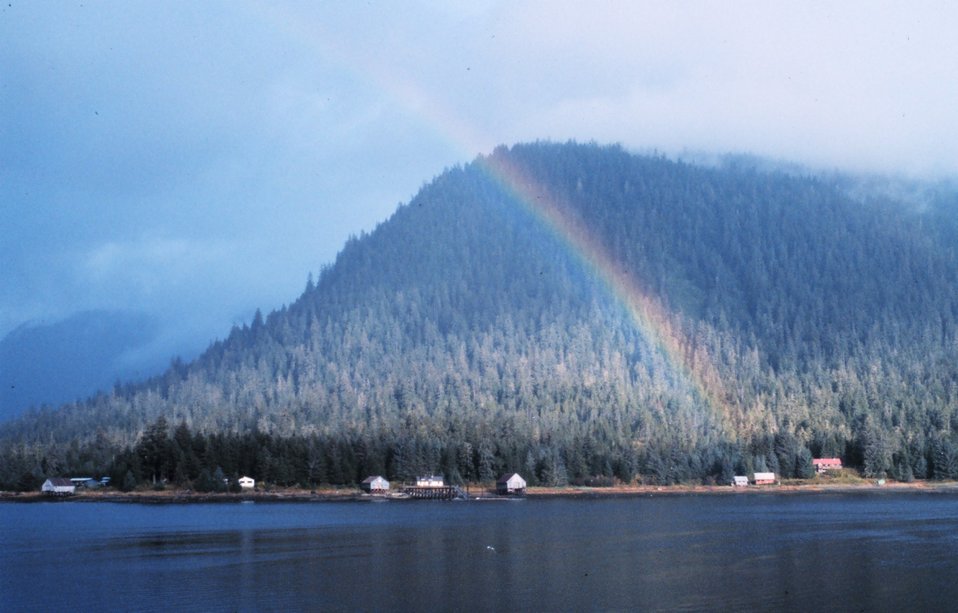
Rainbow at Stephens Passage